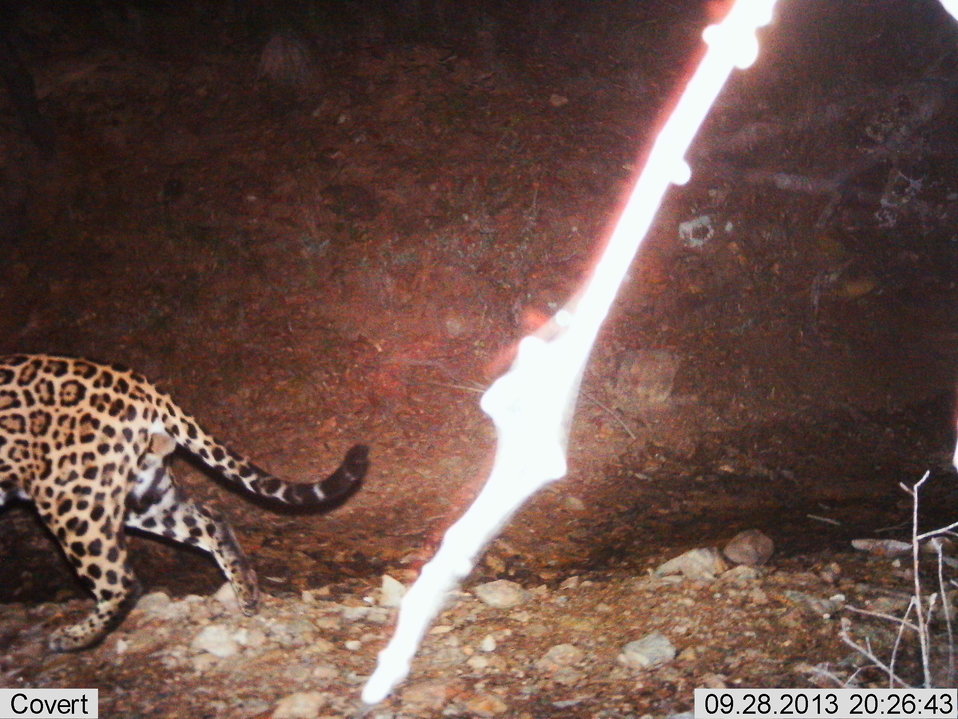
Male jaguar photographed by automatic wildlife cameras in the Santa Rita Mountains on September 28, 2013, as part of a U.S. Fish and Wildlife Service/Department of Homeland Security-funded jaguar survey conducted by University of Arizona. The jaguar has been photographed previously from this location.